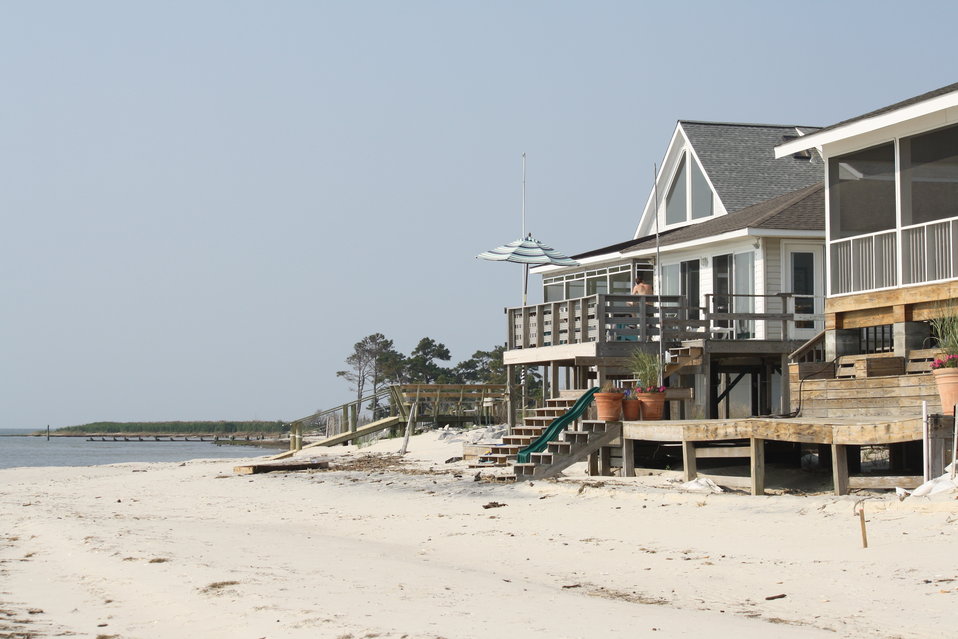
Bavon Beach project

The shoreline at Bavon Beach changes drastically when storms come.